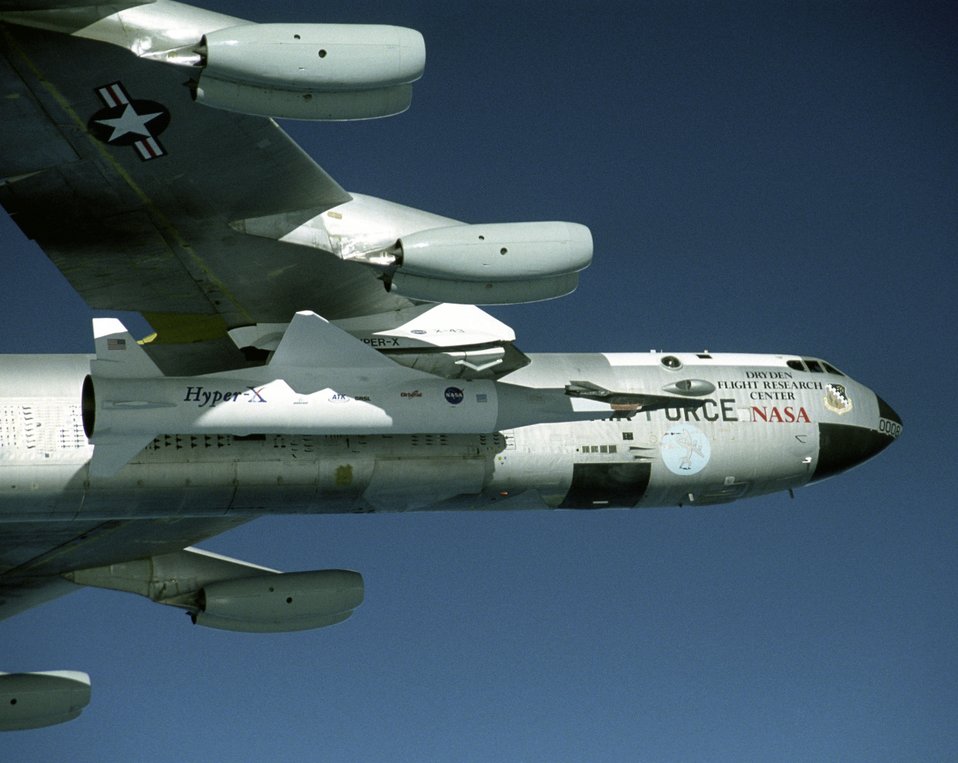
NASA X-43A rockets to Mach 9.8 at Edwards

OVER THE PACIFIC OCEAN -- NASA's B-52B launch aircraft cruises to a test range here carrying an X-43A hypersonic research aircraft attached to a Pegasus rocket Nov. 16. It was taken to launch altitude by the aircraft from the National Aeronautics and Space Administration's Dryden Flight Research Center at Edwards Air Force Base, Calif. About an hour later the Pegasus booster was released from the B-52 to accelerate the X-43A to its intended speed of Mach 10.